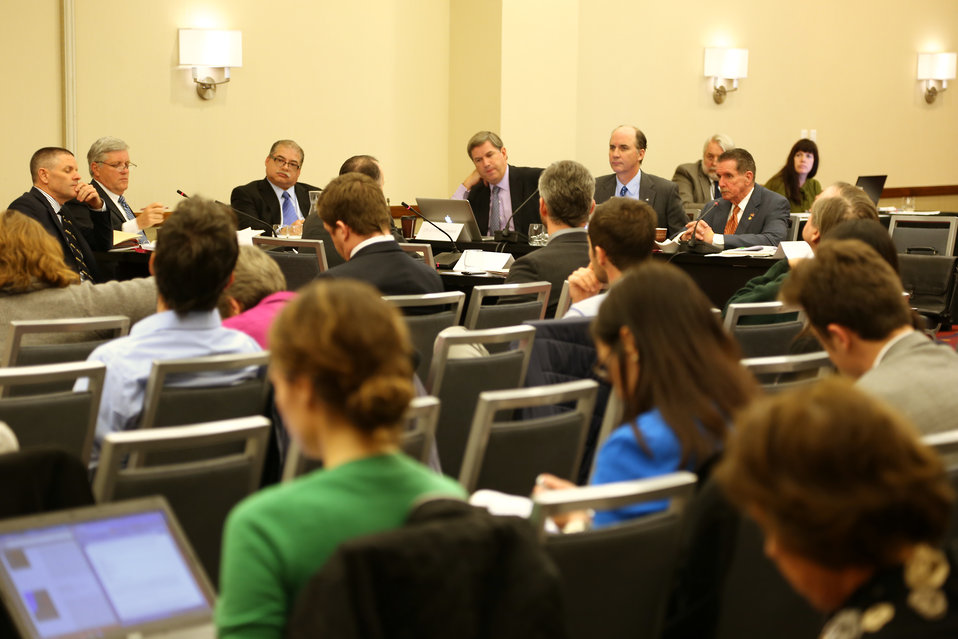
Wildlife Trafficking Advisory Council Meeting March 20, 2014